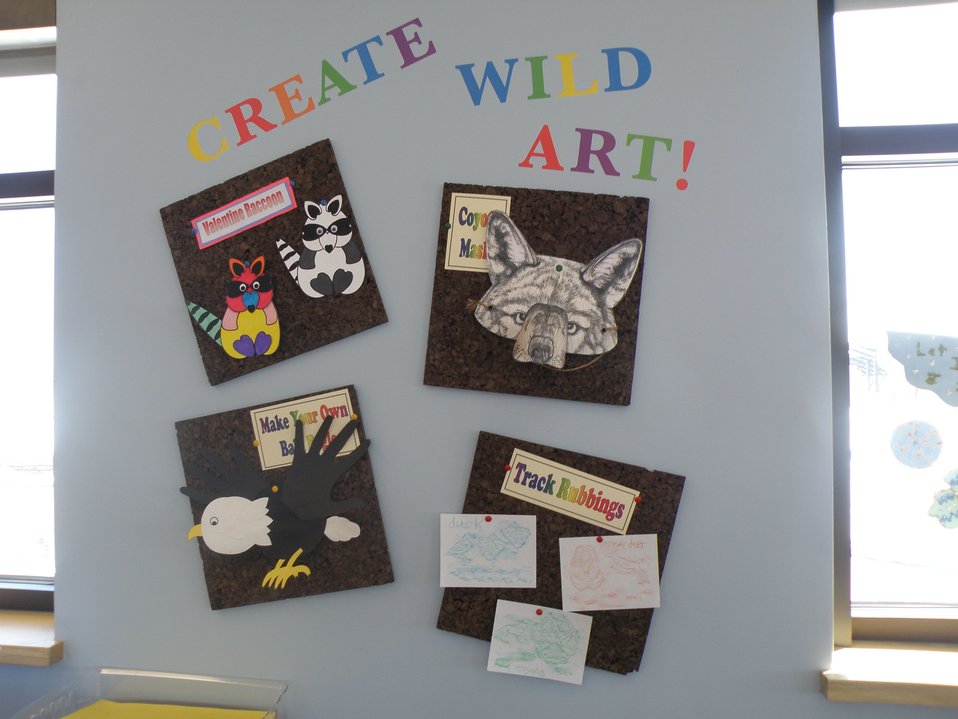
Discovery Room Animal Tracks